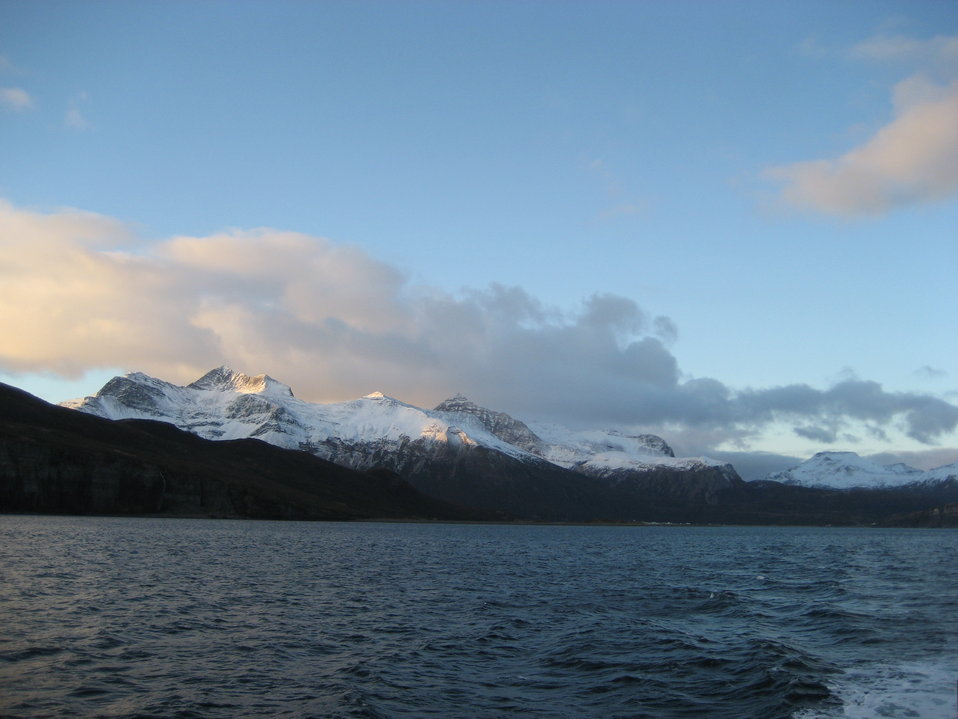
A scene along the Alaska Peninsula.